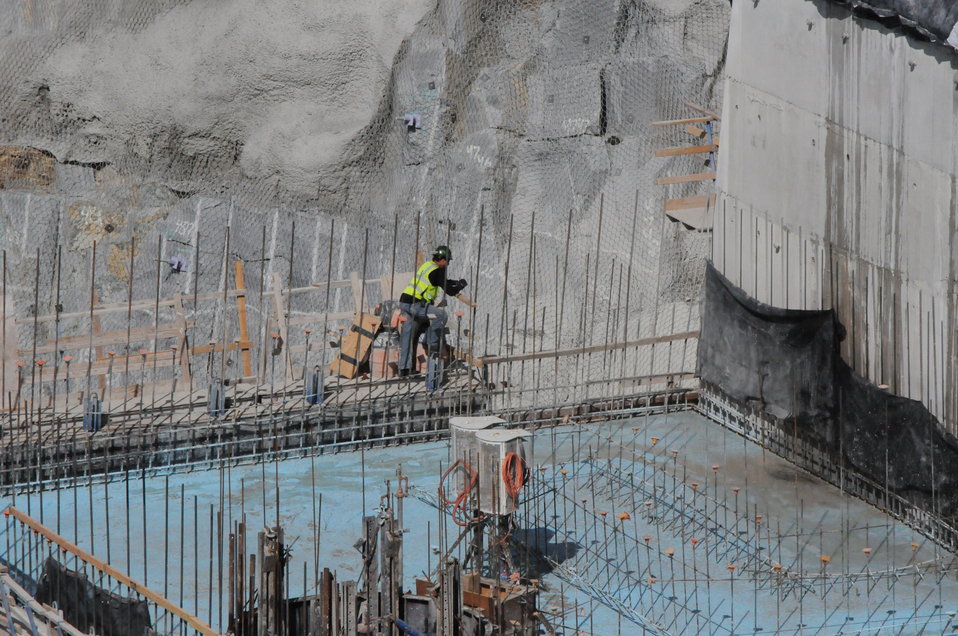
Placing Steel Rebar

Contractors working for the Sacramento District construct the support system for the rising Folsom Dam auxiliary spillway on March 14. The control structure—essentially a second dam—will stand as tall as the Statue of Liberty upon completion, estimated in October 2017, and will help reduce the risk of flooding in the Sacramento region.